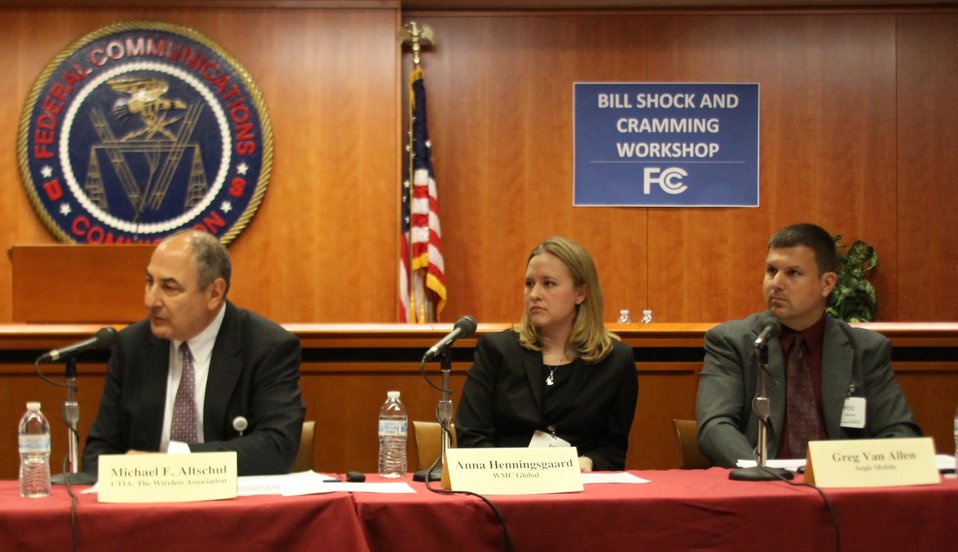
April 17, 2013 Bill Shock and Cramming Workshop